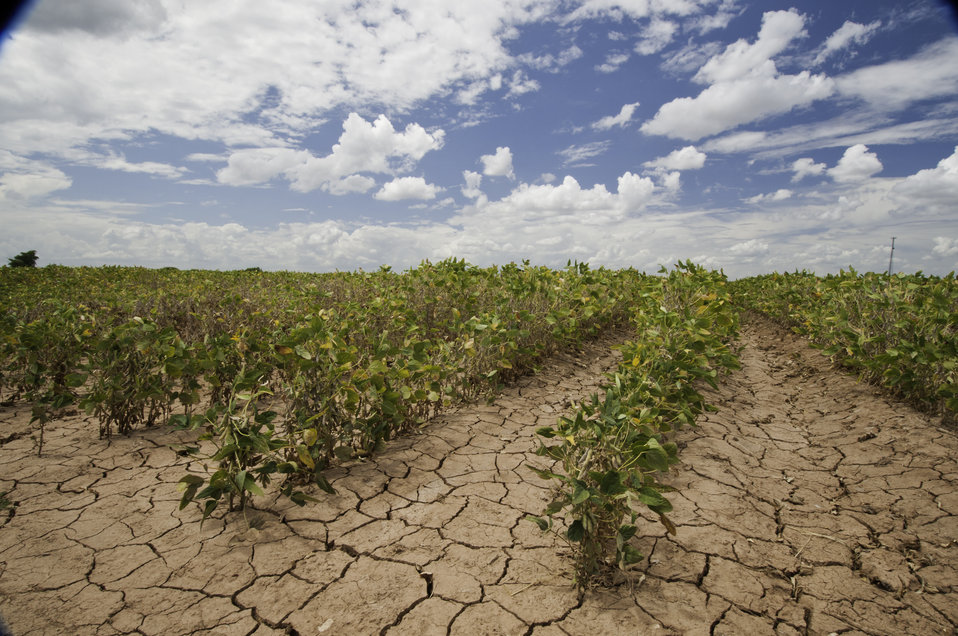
Soybeans show the effect of the drought near Navasota, TX on Aug. 23, 2013.